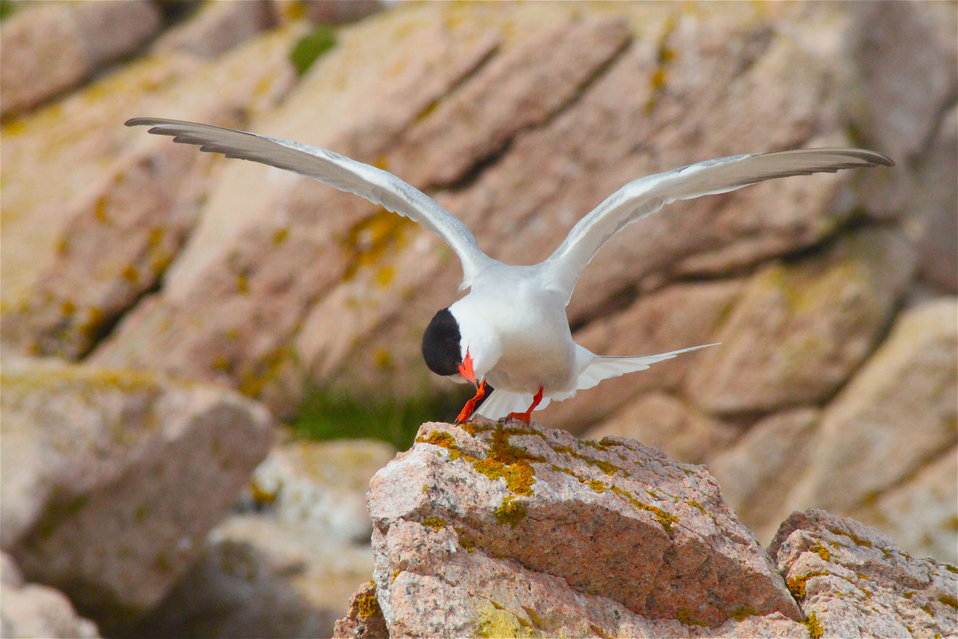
Common Tern Wings Spread